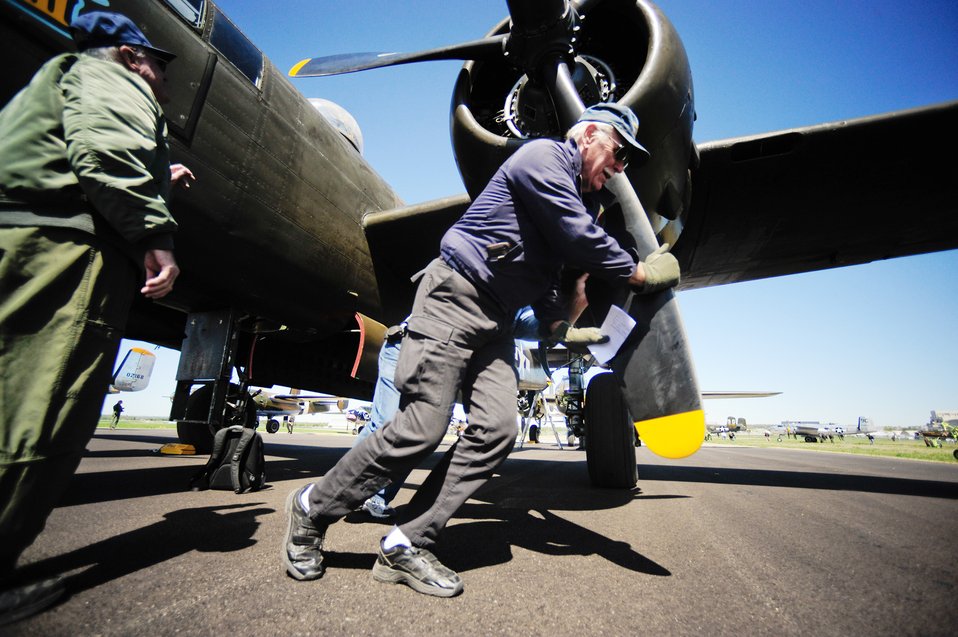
B-25 Mitchells fly again

The crew of the B-25 Mitchell